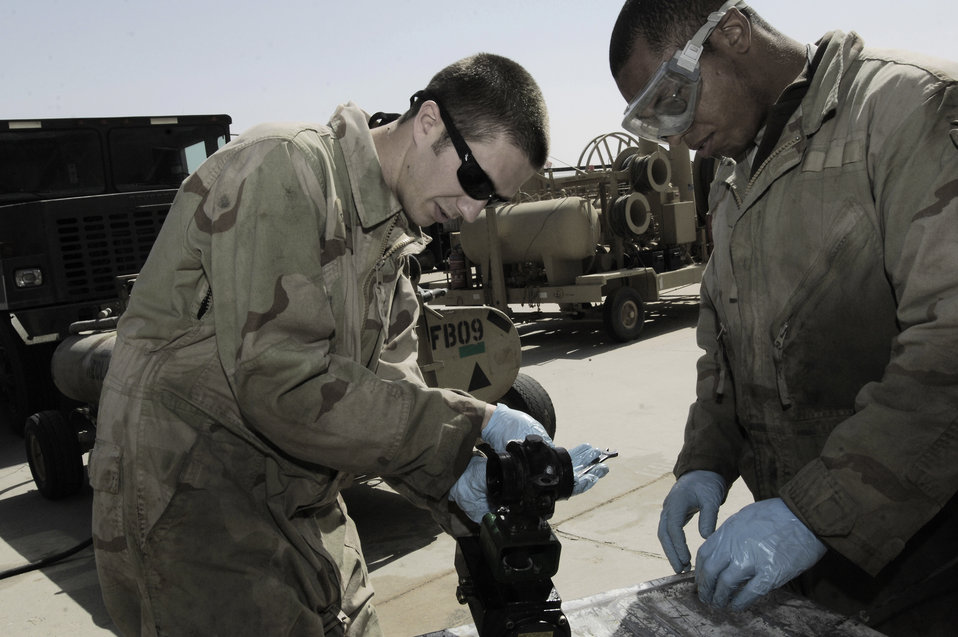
Fueled to fight

Senior Airmen Brandon Huelsman (left) and Ben McDonald repair an over-wing valve from an R-11 fuel truck Feb. 27 in Southwest Asia. The fuels management flight is responsible for inventorying fuel daily, and for the transfer and issue of fuel to both vehicle operators and aircrews in support of operations Enduring Freedom and Iraqi Freedom. Both Airmen are refueling maintenance technicians from the 386th Expeditionary Logistics Readiness Squadron.